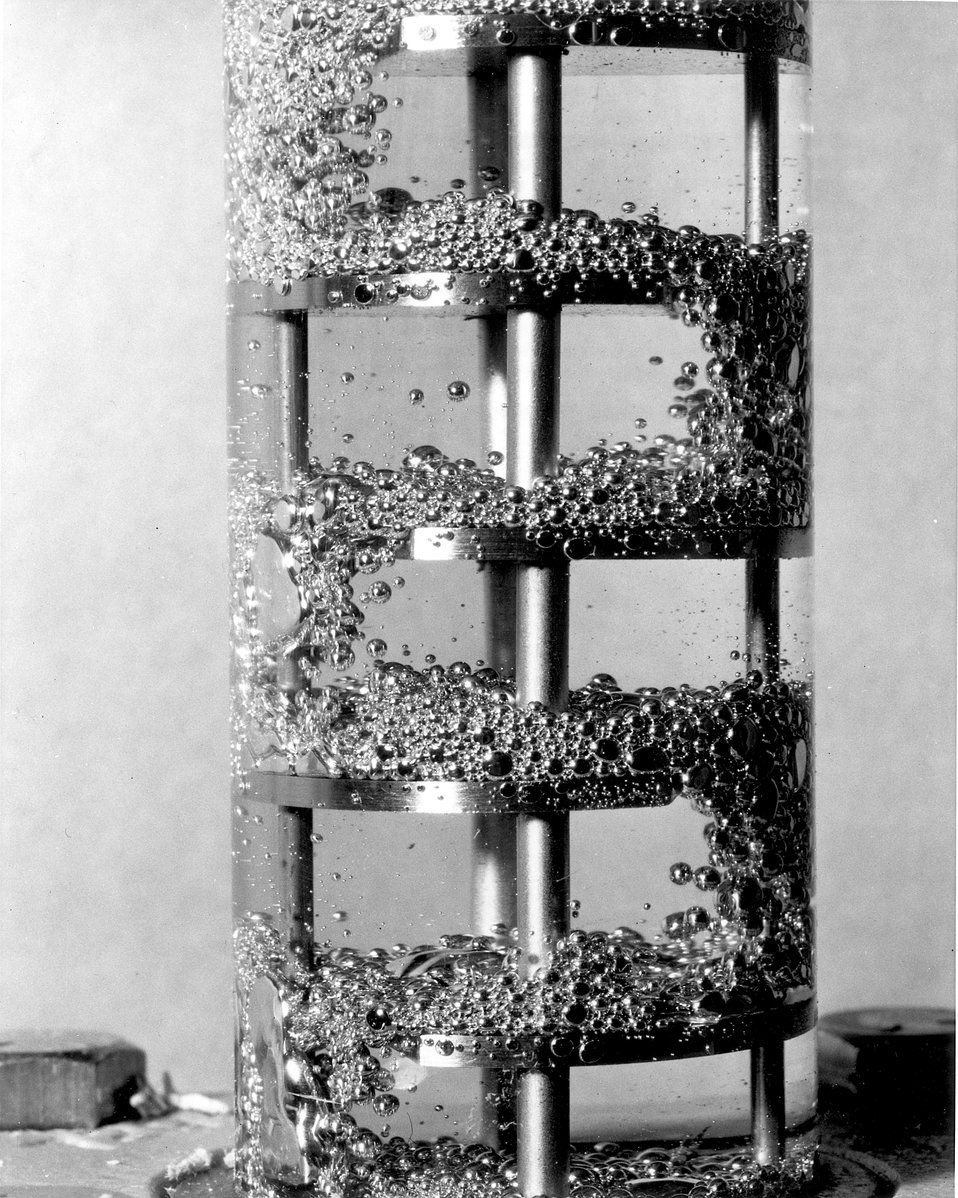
In developing the reductive extraction processes for removal of protactinium and fission products from the Molten Salt Reactor, high-temperature solvent extraction columns are being studied for contacting molten fluoride salt with liquid bismuth. c. 1970